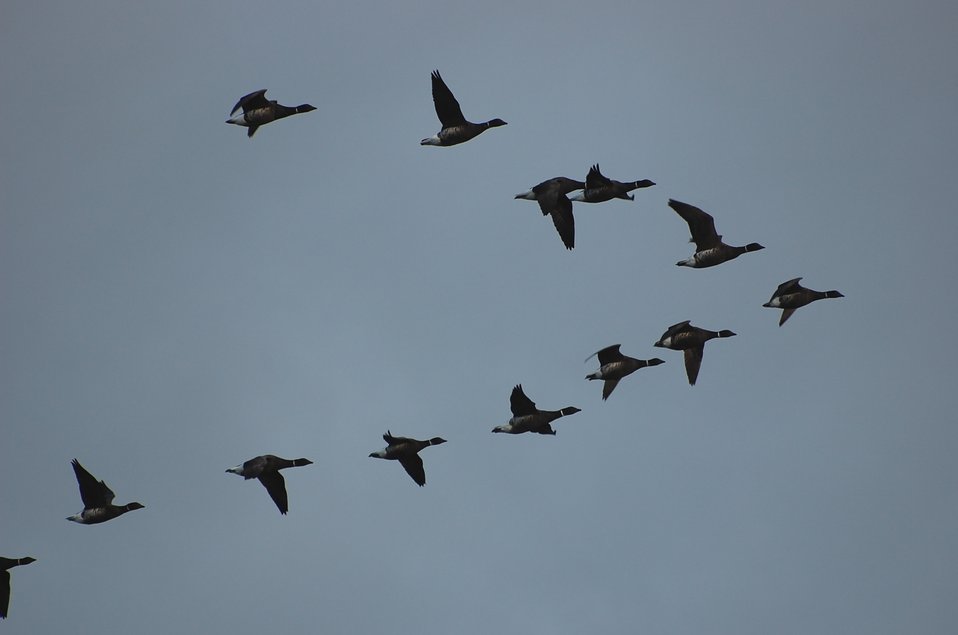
Brant at Izembek Lagoon, Izembek National Wildlife Refuge